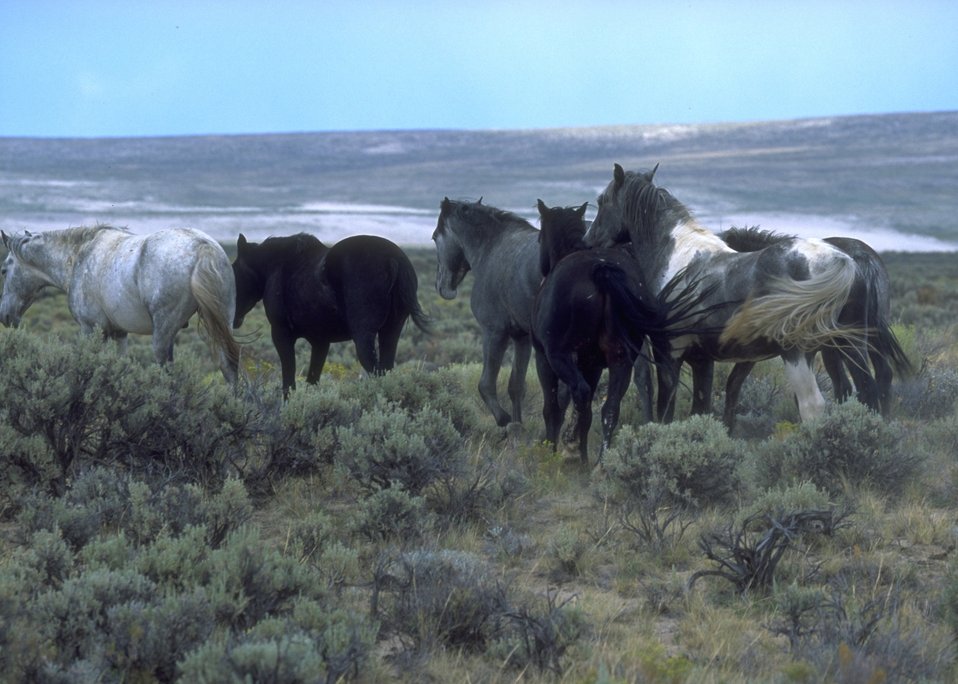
Wild horses, Rock Springs Field Office.